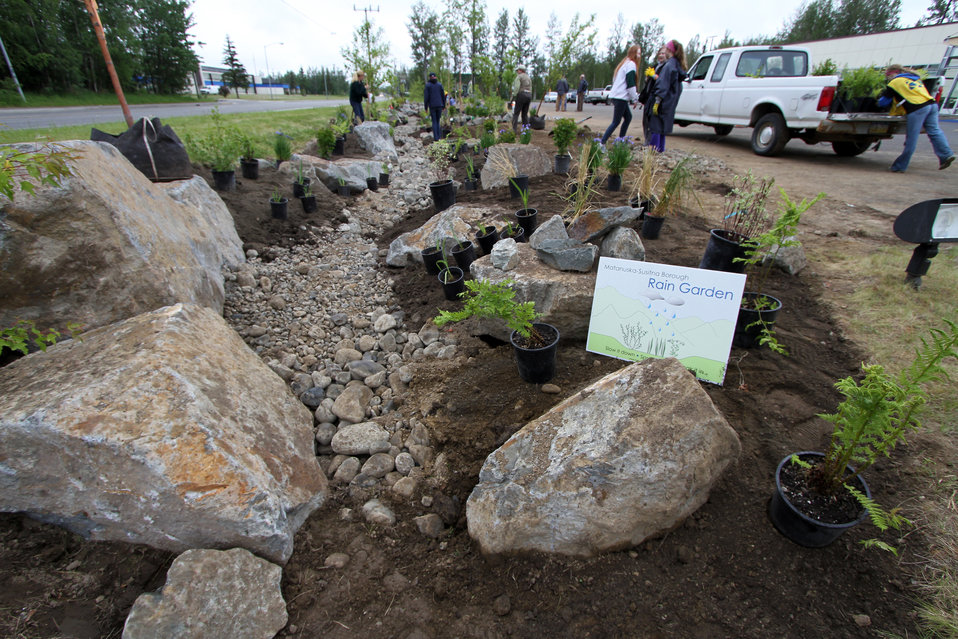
Rain Garden Installation

A rain garden installation at the Palmer Senior Center in Southcentral Alaska. Rain gardens are vegetated areas built specifically to manage stormwater runoff from driveways, sidewalks, roofs, and other paved surfaces. Here, youth from LDS help with planting. USFWS/Katrina Mueller